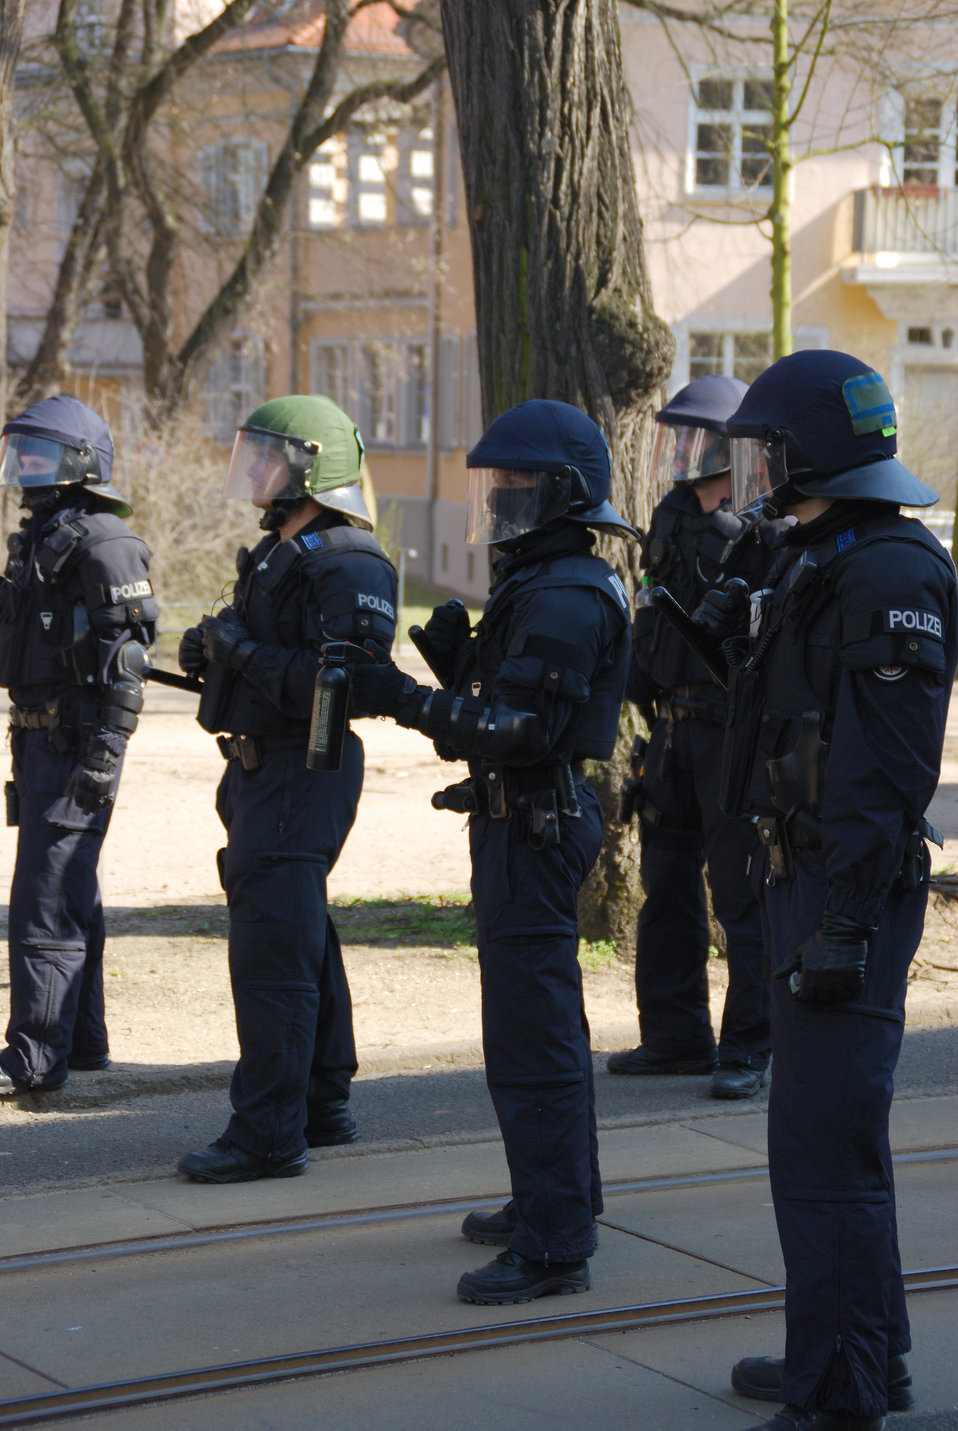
Proteste gegen den Nazi-Aufmarsch am 24.3.2012 in Frankfurt (Oder)